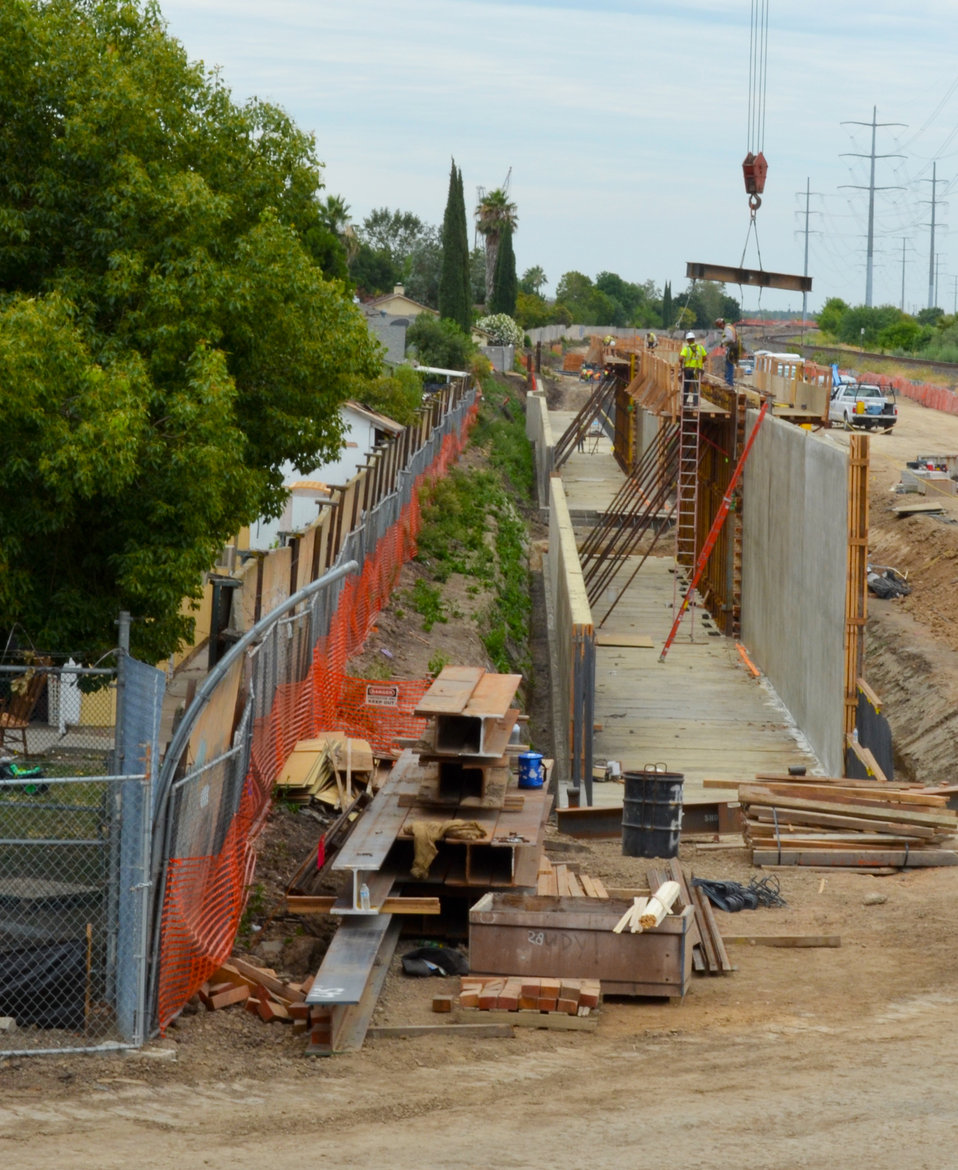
Morrison Creek flood wall July 19, 2012

Contractors for the U.S. Army Corps of Engineers Sacramento District continue construction July 19, 2012, on a new concrete flood wall along Morrison Creek in south Sacramento, Calif. The 3,300-foot-long flood wall will extend an existing flood wall, further reducing flood risk in the area, and eventually house a potable water line for Sacramento. The work is a joint effort between the Corps, the Central Valley Flood Protection Board and the Sacramento Area Flood Control Agency. Completion is scheduled for 2013.